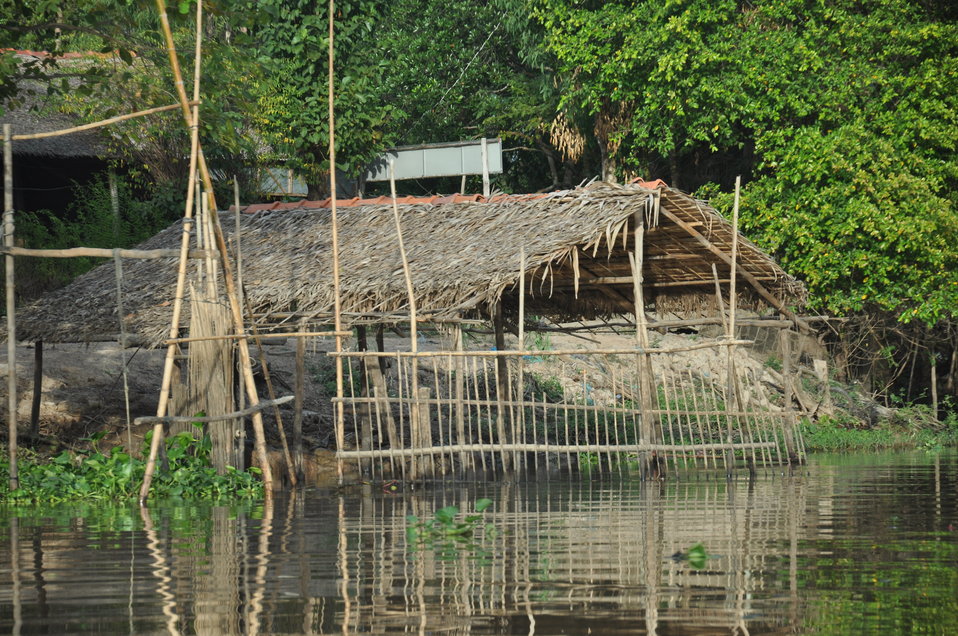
USAID supplies assistance to flood-stricken Long An Province, Tan Thanh District

USAID site visit to Long An Province to visit flood relief beneficiaries